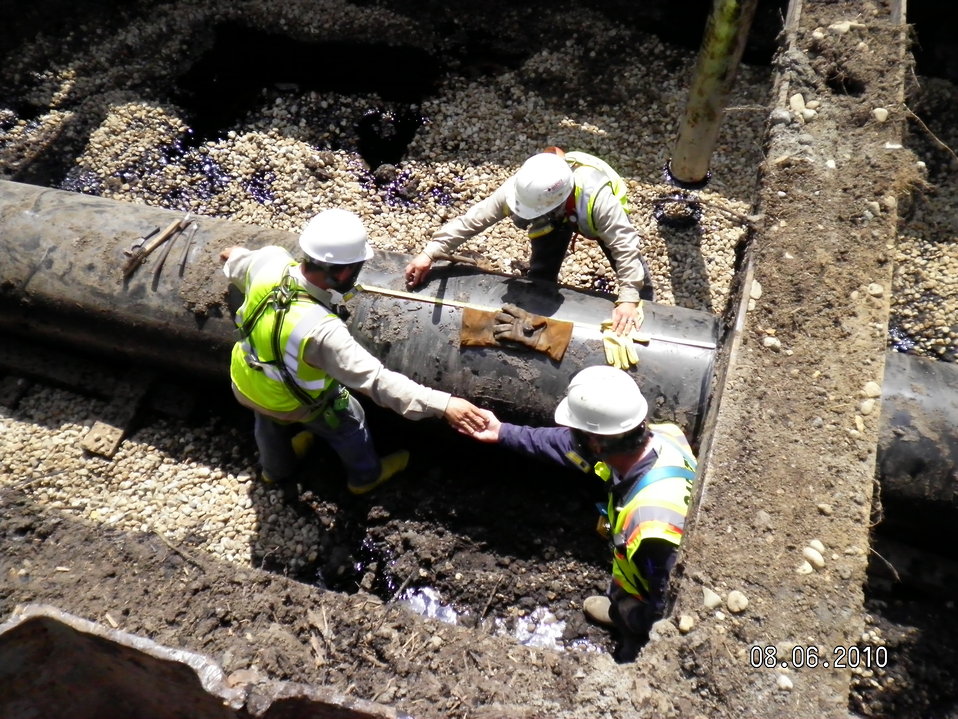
Overhead Worker - Enbridge Oil Spill pipeline removal

Technicians in personal protective equipment measure pipe before cutting and removing the section from the Enbridge pipeline oil spill site near Marshall, Michigan.